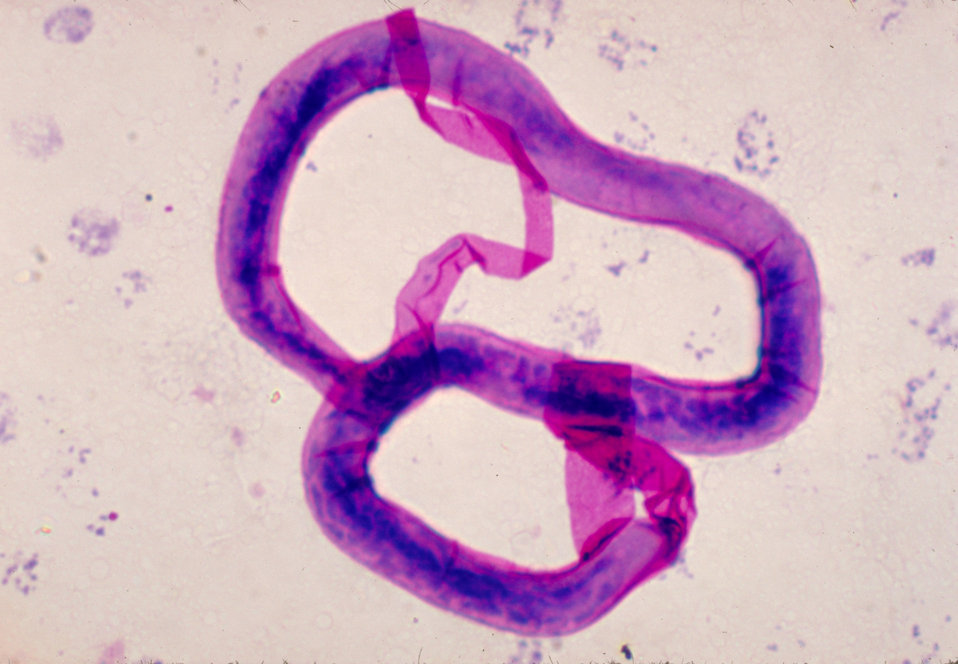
This micrograph shows the posterior end of a B. pahangi microfilaria in thick blood smear using Giemsa stain technique.